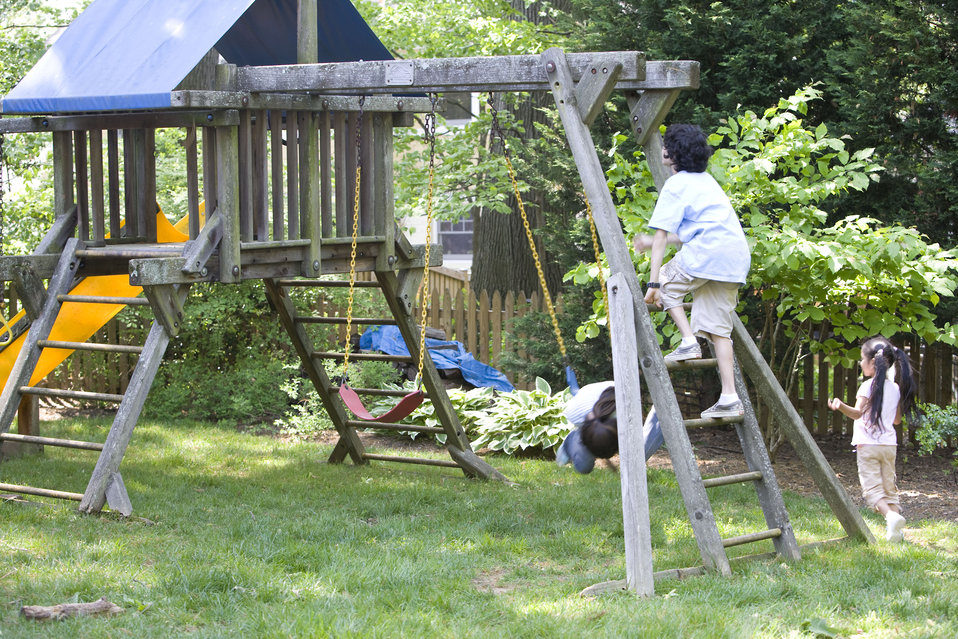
Children love playing outside, and these children were thoroughly enjoying their wooden swing set, and all were having fun in the fresh outdoor air, and the beautiful weather. It's important to note that older wooden playsets may have been treated with arsenic and/or creosote, and therefore, parents need to know if these chemicals were used in their manufacture.